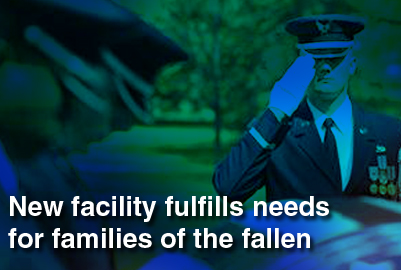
Center for Families of the Fallen

A new facility, known as the Center for Families of the Fallen, was dedicated Jan. 6, 2010, at Dover Air Force Base, Del. The center will serve as a haven for families who have traveled to Dover AFB to attend the dignified transfer as thier fallen loved ones arrive in the U.S.